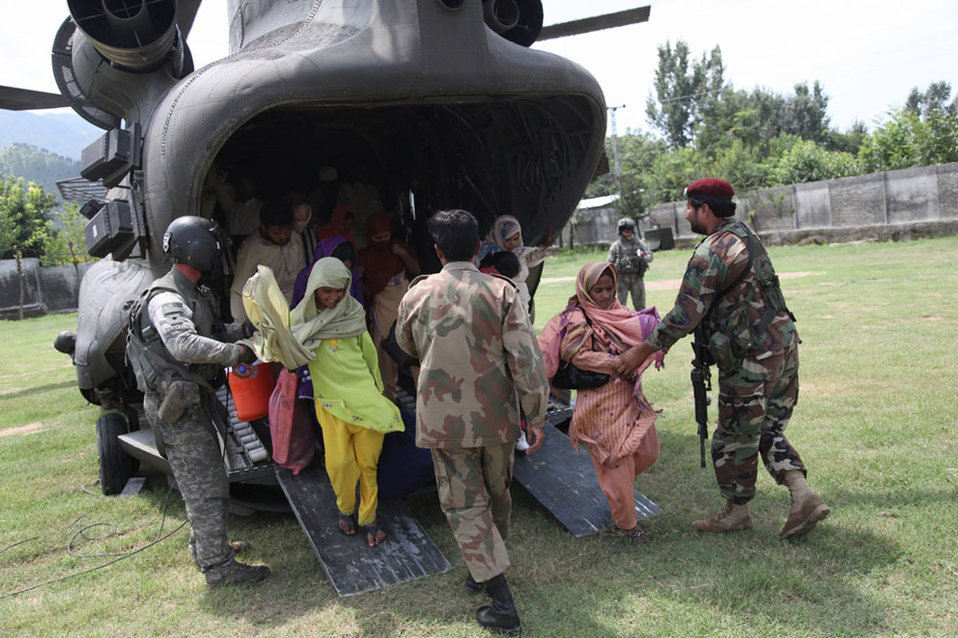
Members of the Pakistan military help civilians unload from the back of a U.S. Army (CH-47) helicopter in the town of Khwazahkela, during the evacuation of civilians, as part of the disaster relief effort to help the flood victims of Pakistan, Khyber Pakhtunkhwa Province (formerly North West Frontier Province), Pakistan, on August 5, 2010.